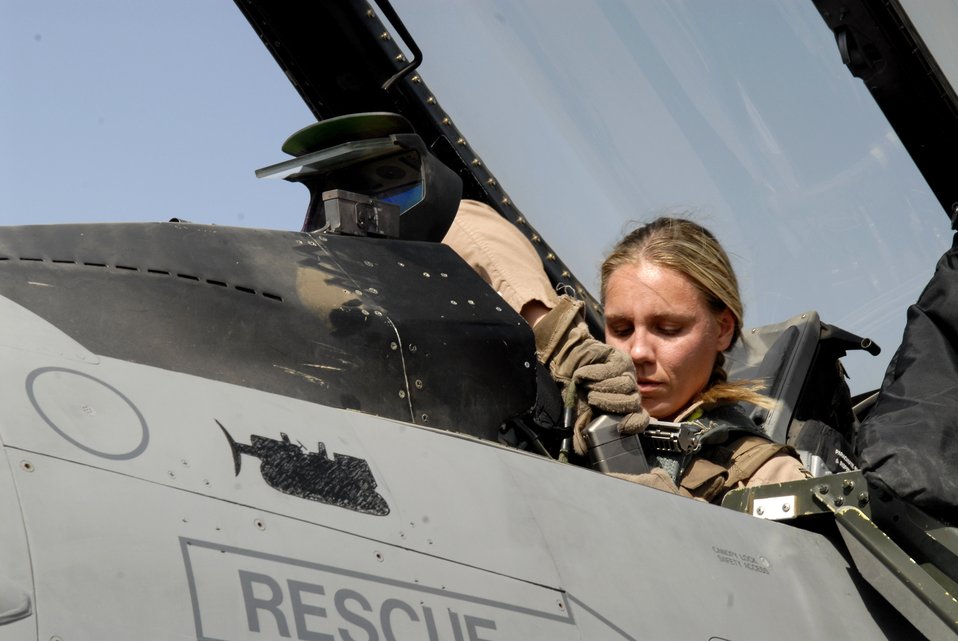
Oct. 25 airpower summary: F-16s support coaliton

Capt. Caroline Jensen connects the communications receiver to her helmet ensuring she is in contact with personnel on the ground before taking off in an F-16 Fighting Falcon from Balad Air Base, Iraq. Captain Jensen is assigned to the 4th Expeditionary Fighter Squadron and is deployed from Hill Air Force Base, Utah.